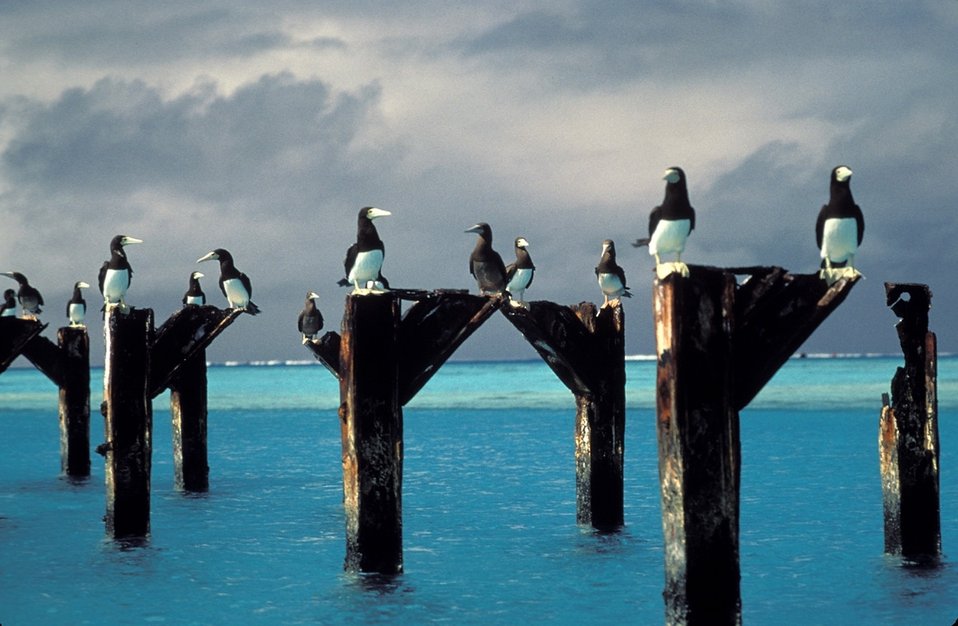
Brown boobies atop pier posts at Johnston Atoll NWR

Brown boobies stake out positions atop the posts of an old pier at Johnston Atoll National Wildlife Refuge in the Pacific.